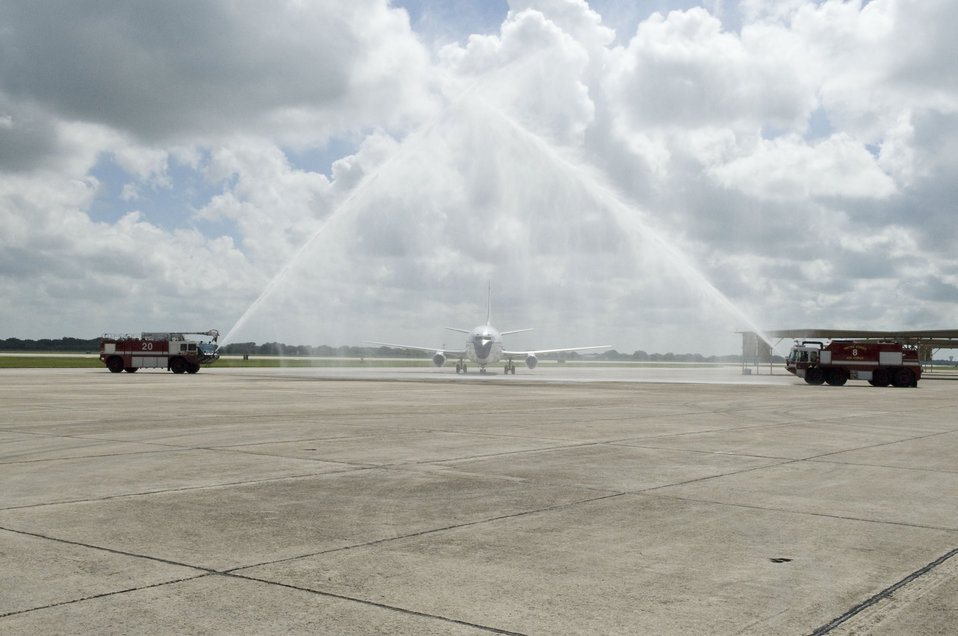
T-43 retires

The last T-43 combat systems officer trainer is hosed down by fire trucks after its “fini” flight Sept. 17, 2010, at Randolph Air Force Base, Texas. The T-43, a version of the Boeing 737, retires from the Air Force inventory after 37 years of service as a navigator training platform. The CSO training mission will be moving to Naval Air Station Pensacola, Fla.